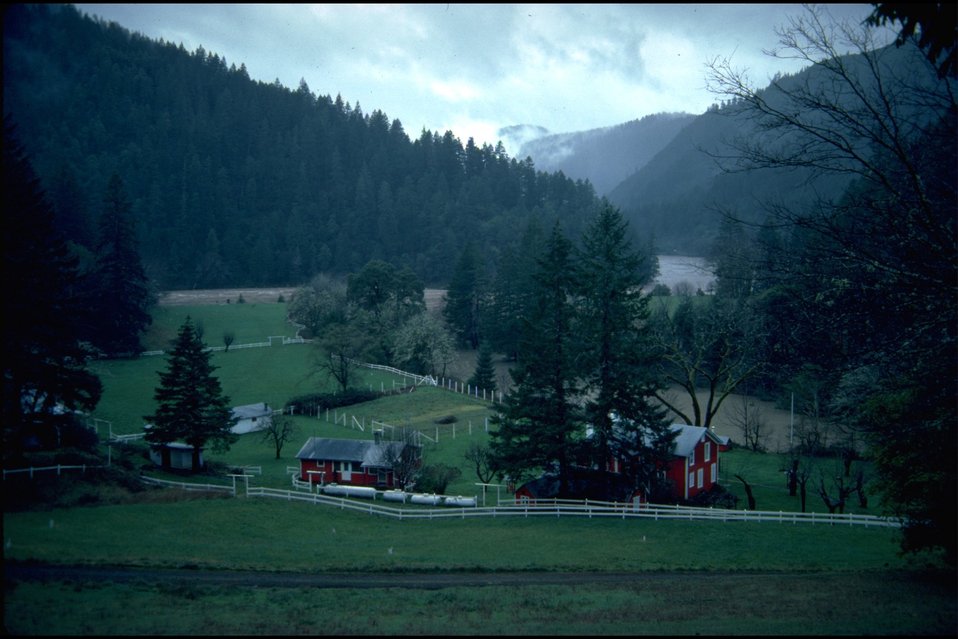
Rogue River Ranch, Mule Creek. Looking toward Mule Creek Caretaker's house and Main house.